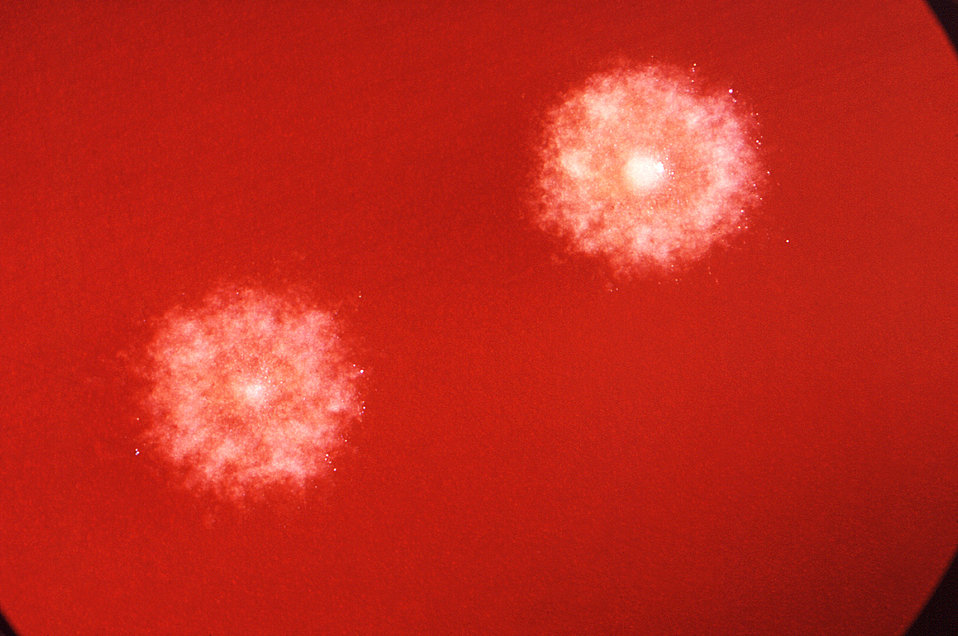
Under a very low magnification of 9X, this image depicts some of the colonial morphology exhibited by two colonies of Gram-positive Bacterionema matruchotii bacteria, of the strain W-1113.